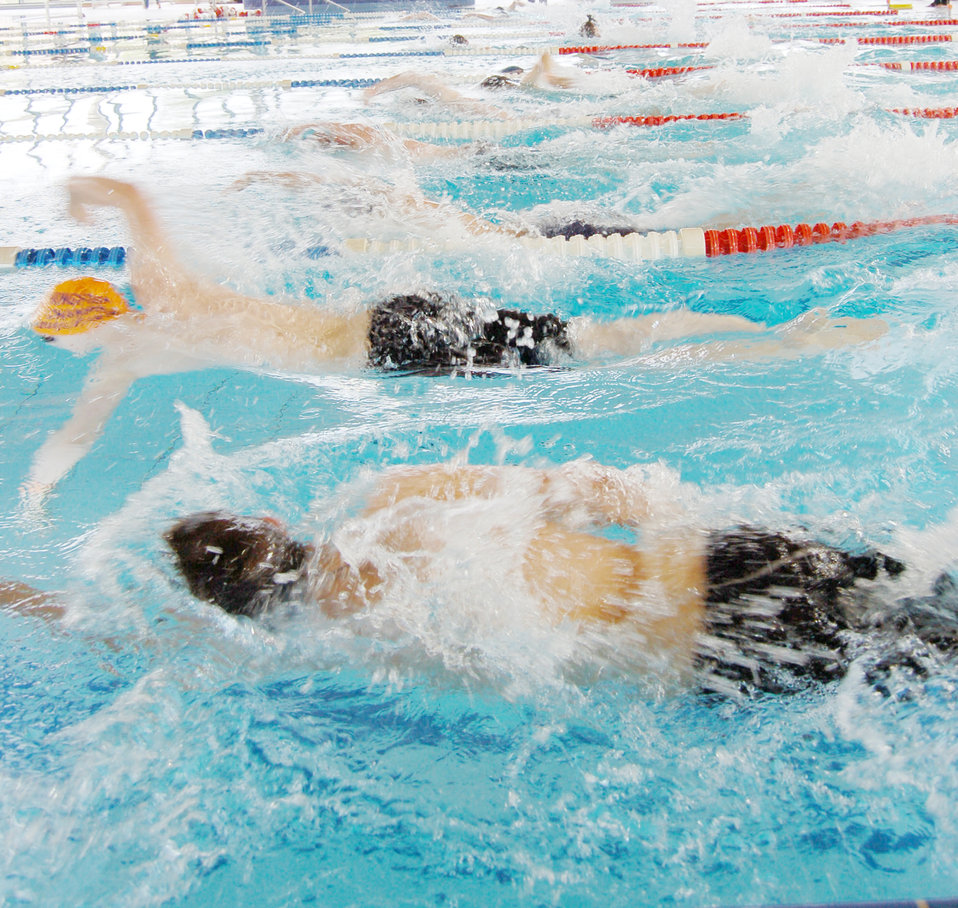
Triathlon kicks off fitness month, brings families together

Youth compete in the third heat of the swimming portion during the second annual FitFactor Triathlon May 2, 2010, at Ramstein Air Base, Germany. Participants swam either 200 or 500 meters, depending on their age category.